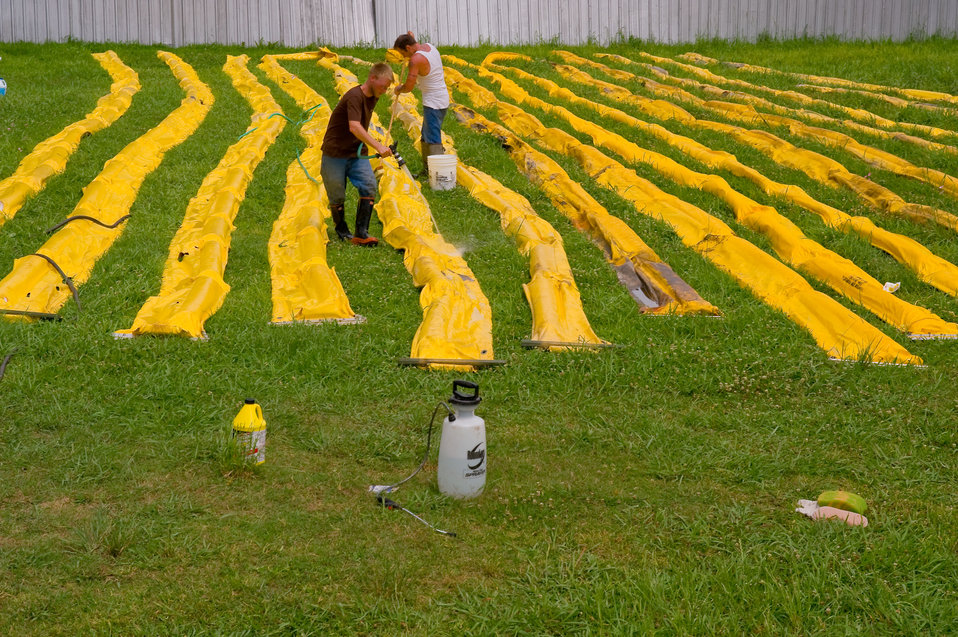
Cleaning mud from booms before deployment

May 13, 2010. Sean and Billy help clean mud off of oil boom to be deployed by their boss's boat. Just one of the vessels that signed up under a 'Boat of Opportunity' where private vessels have eagerly signed up to help contain oil from the BP oil release.